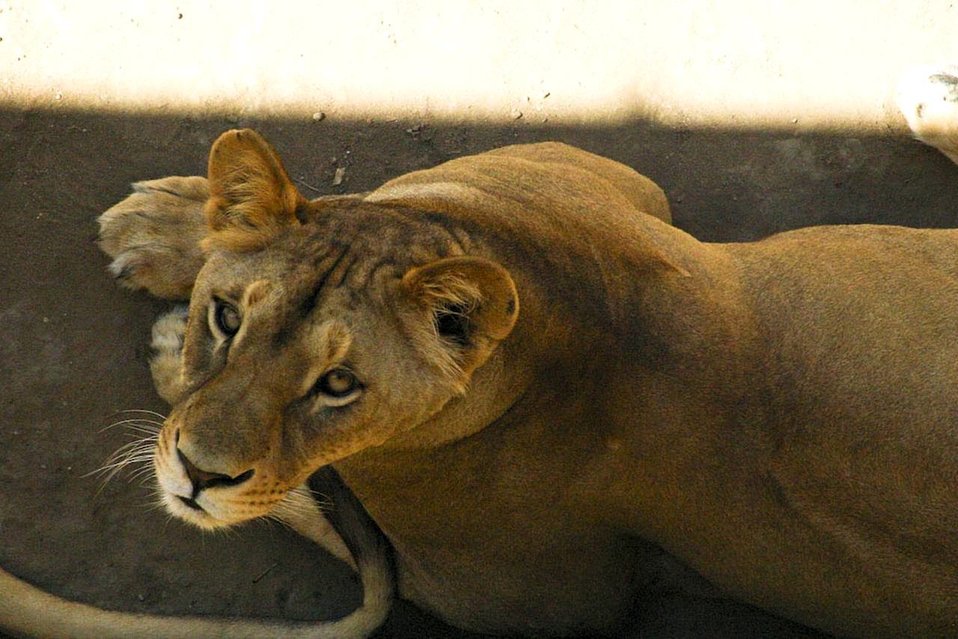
English:
Image title: Lion female animal Image from Public domain images website, http://www.public-domain-image.com/full-image/fauna-animals-public-domain-images-pictures/lion-public-domain-images-pictures/lion-female-animal.jpg.html